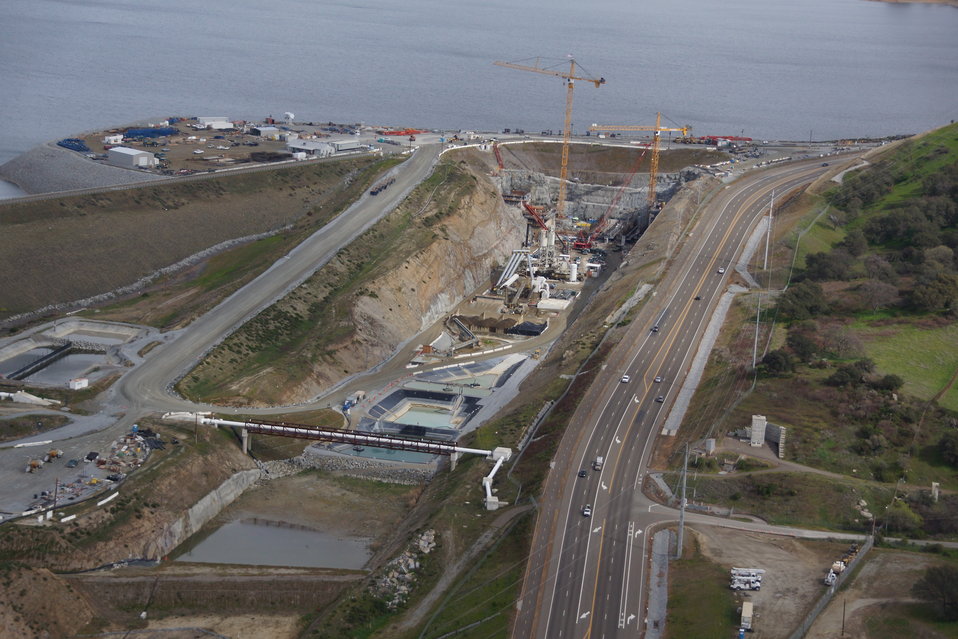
Aerial View of Folsom Dam Auxiliary Spillway

An aerial view shows the entire construction site of the Folsom Dam auxiliary spillway March 6, 2013. Excavation began in 2011 to remove 3.5 million cubic yards of rock and soil from the site. In 2012, the first steel and concrete were placed for the control structure—essentially a second dam—that will stand as tall as the Statue of Liberty when completed. The completed dam and chute will include 350,000 cubic yards of concrete, enough to line up concrete trucks from Sacramento to Los Angeles, and 24 million tons of steel, enough to build two Eiffel Towers. The project is estimated to be completed by October 2017 and is one piece of a larger plan to help the Sacramento region reduce the risk of flooding to a one-in-200 chance for flooding in any given year.